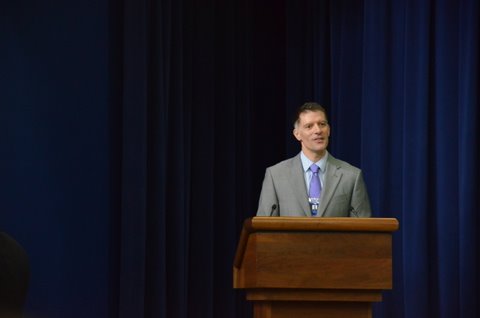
Dr. Grant Colfax

WH 2012 World Hepatitis Day Event